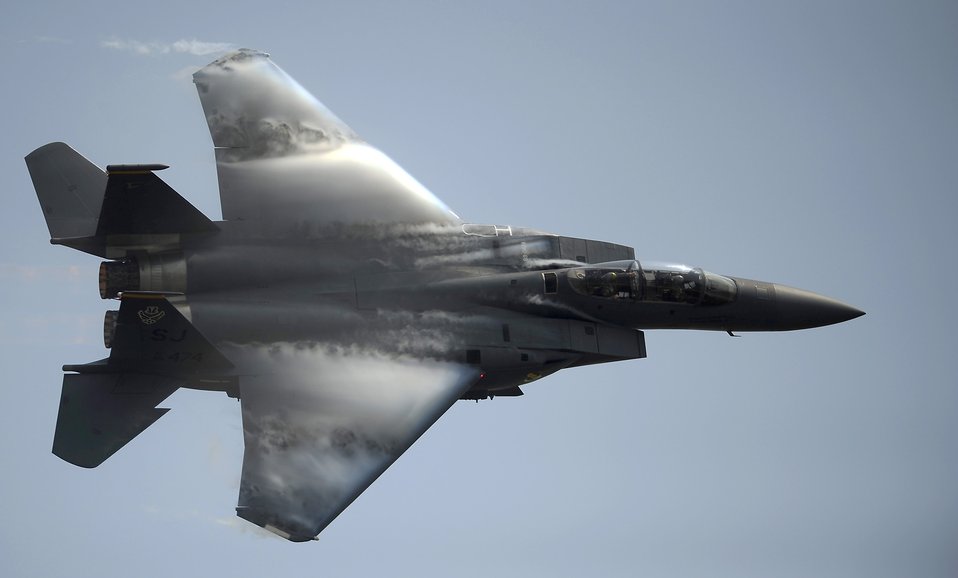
F-15E at Air Expo

An F-15E Strike Eagle pilot demonstrates the aircraft's maneuverability April 9, 2011, during the Charleston Air Expo at Joint Base Charleston S.C. The F-15E is a multirole fighter capable of air-to-surface and air-to-air combat.